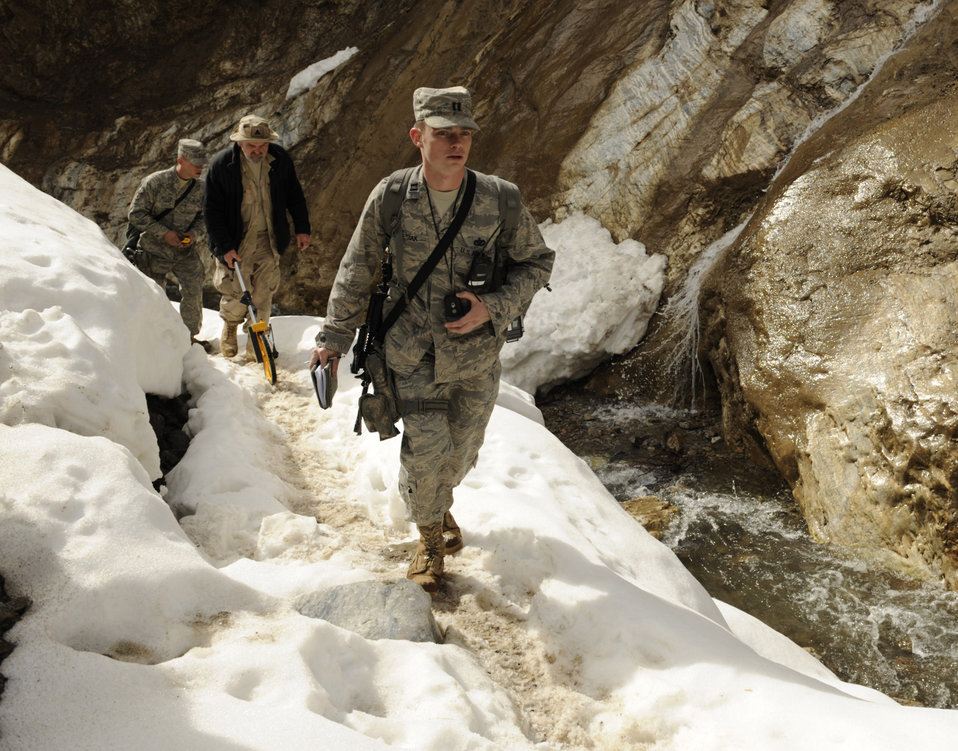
American servicemembers visit Afghan villagers

Captain Patrick Kolesiak walks through a valley while surveying for the possibility of constructing a paved road March 4 in Afghanistan's Panjshir Valley. Captain Kolesiak is the Panjshir Provincial Reconstruction Team lead civil engineer.